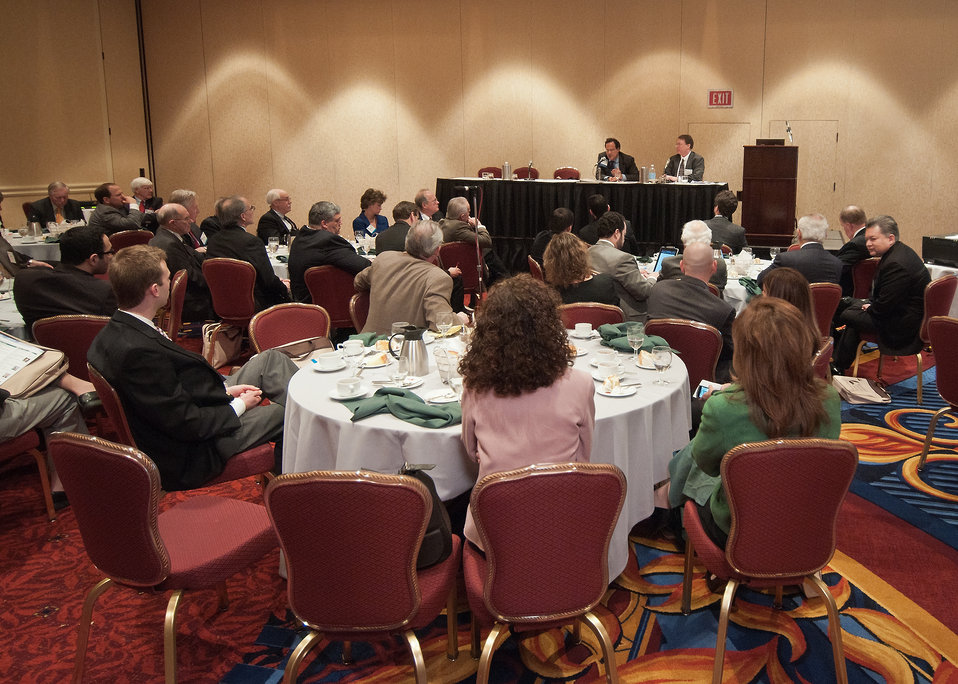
Jose Orive (left), Executive Director, Association of Azucareros Central American (AICA) or Central American Sugar Association, Guatemala and Ron Lord, Economist, Foreign Agriculture Service, United States Department of Agriculture, Washington, D.C., and moderator of the Sugar Trade in Central and North America commodity luncheon at the 2012 Agricultural Outlook Forum, “Moving Agriculture Forward, Growing, Innovating and Celebrating 150 Years” held at the Crystal gateway Marriott Hotel Arlington, Virginia, Friday, February 24, 2012. This year’s forum coincides with the 150th anniversary of the Department of Agriculture addressing economics, marketing, research, food safety, nutrition, conservation, rural development, alternative energy, trade and many other agricultural issues.